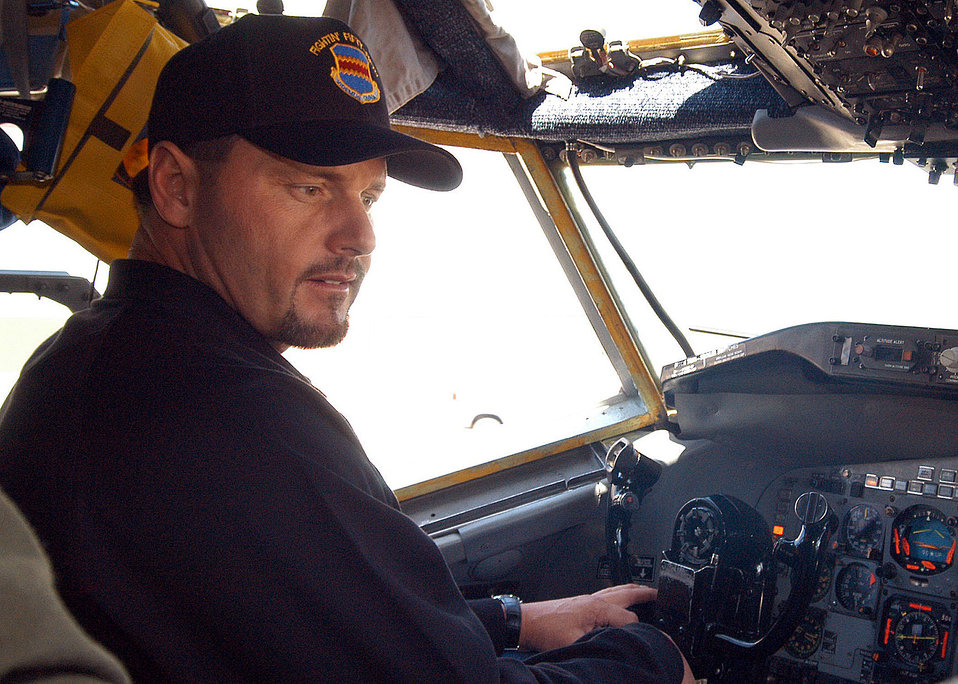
'The Rocket' lands at Offutt

OFFUTT AIR FORCE BASE, Neb. -- Houston Astros pitcher Roger Clemens checks out an RC-135 Rivet Joint here April 26. Mr. Clemens visited as part of a United Service Organizations tour.